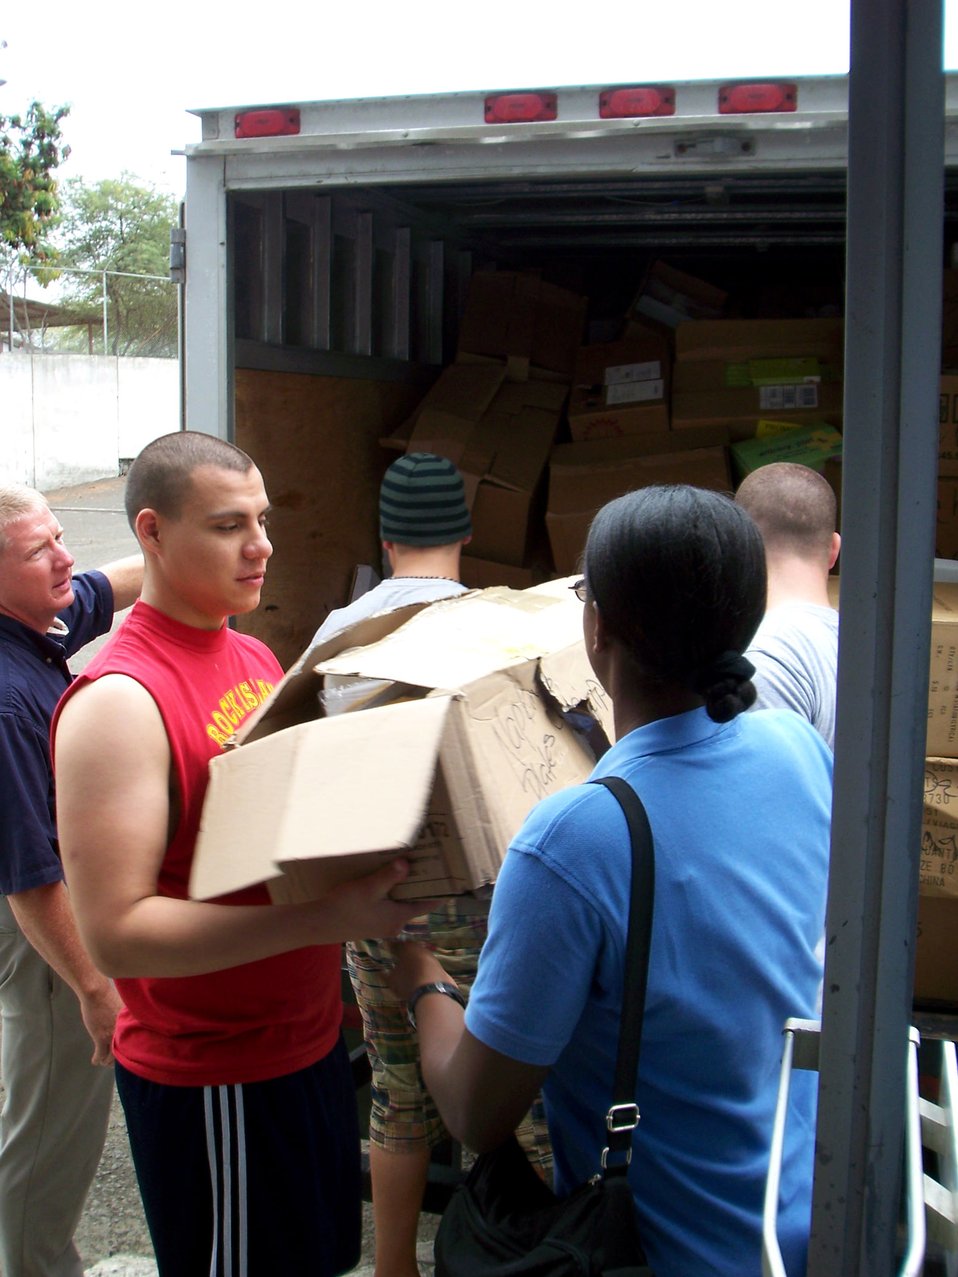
Manta Airmen deliver truckload of donations to burn center

Airman 1st Class Oliver Guerrero (front left) hands a box of donated items to Tech. Sgt. Nicky Ford as Lt. Col. Gary Califf (far left) directs volunteers April 5 near Manta, Ecuador. Air National Guard members from the 186th Air Refueling Wing from Meridian, Miss., who are deployed to Ecuador donated a truckload of donations to the burn center at Rodriguez Zambrano Hospital. Airman Guerrero works force protection for 478th Expeditionary Operations Squadron. Sergeant Ford is a 478th EOS chaplain assistant and Colonel Califf is a 478th EOS chaplain.